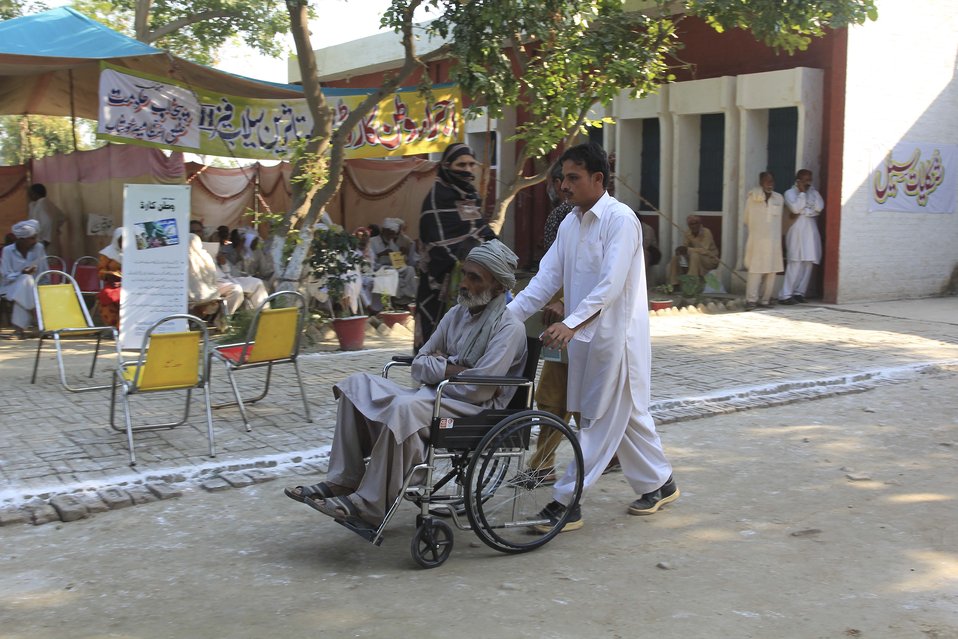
Citizens Damage Compensation Program